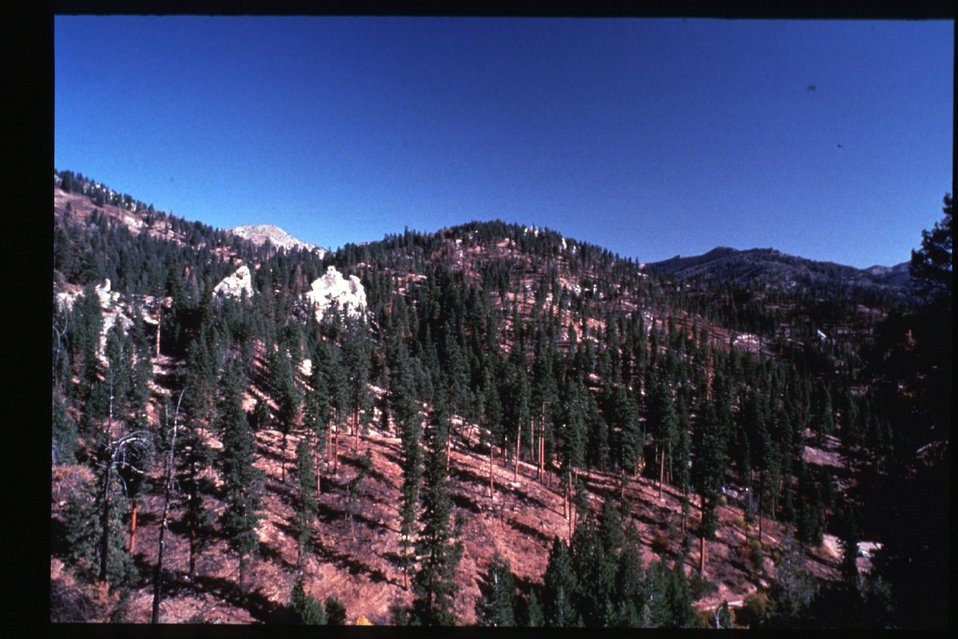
Boise Foothills Fire Danskin Mountains and South Fork of Boise River Four River Field Office LSRD Lower Snake River District